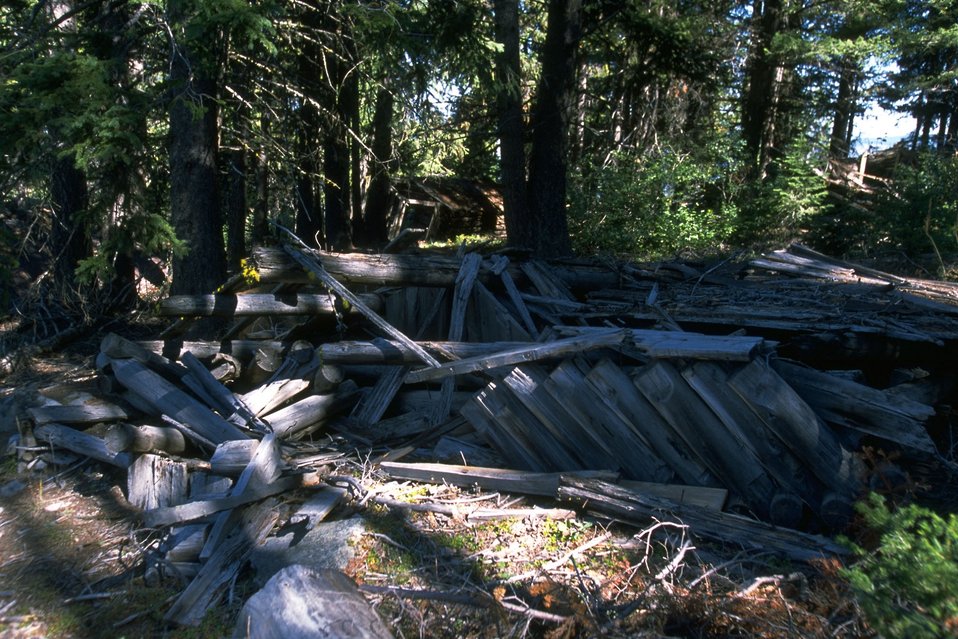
Historic cabin in Coloma Ghost Town